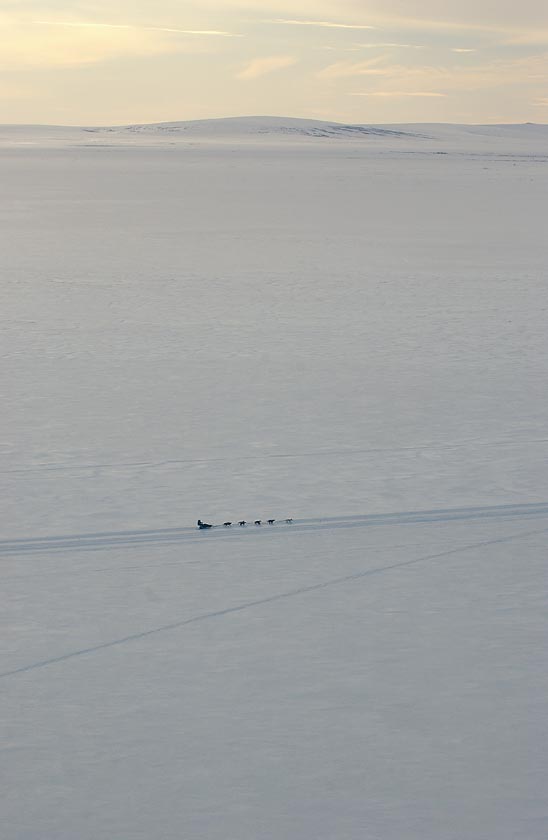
Elmendorf Airman finishes Iditarod

ALONG THE IDITAROD TRAIL, Alaska -- Maj. (Dr.) Tom Knolmayer drives his dog team across a frozen section of the Bering Sea during the 33rd Iditarod Trail Sled Dog Race. Dr. Knolmayer and his dog team spent 13 days, 22 hours, 13 minutes and 25 seconds on the trail, covering 1,161 miles. He is chief of surgery at Elmendorf Air Force Base, Alaska.